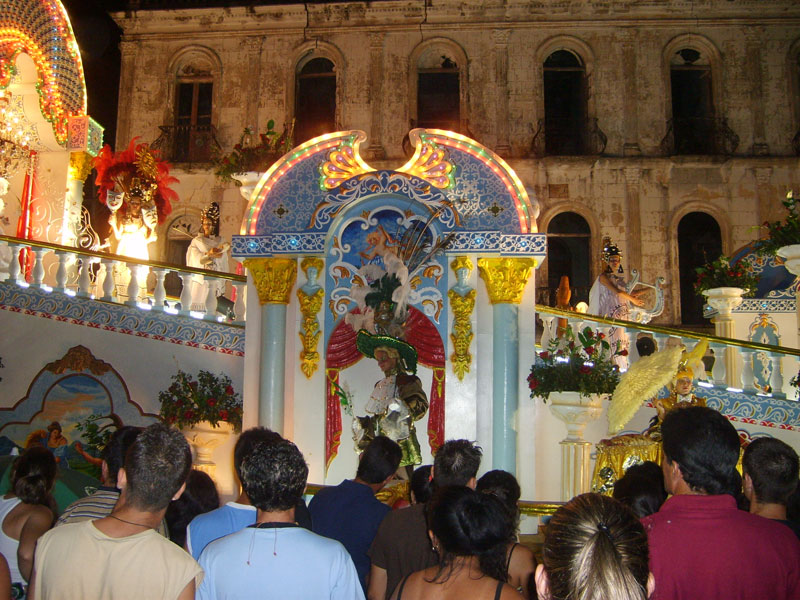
my photos from parrandas in taguayabon, cuba.